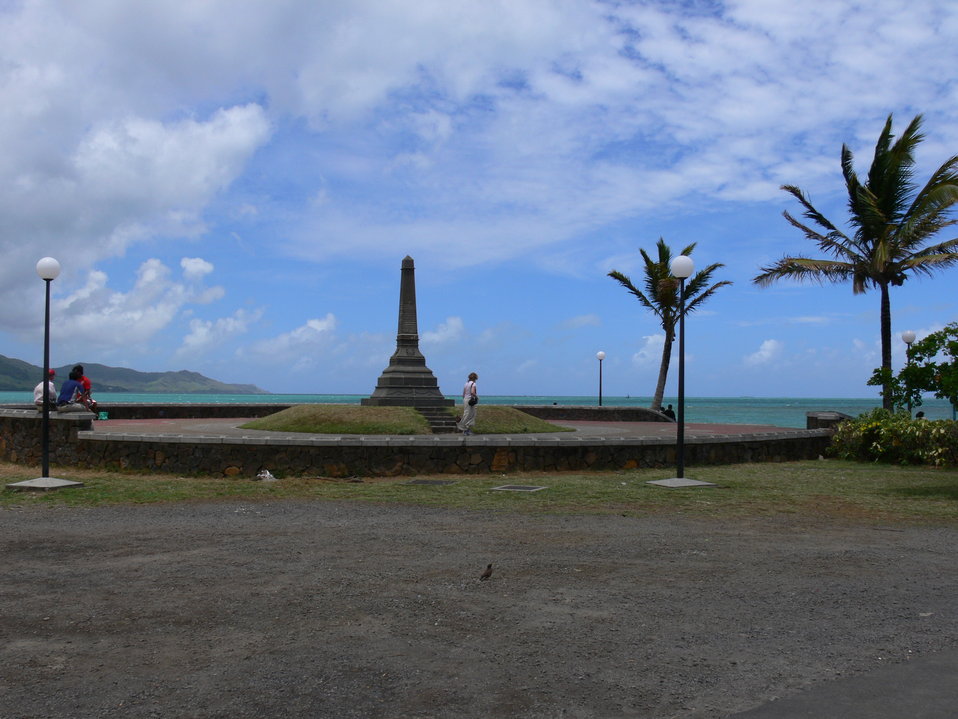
This photograph was made by myself at Grand-Port Mauritius, in the graceful year of 2007 with the digital camera Panasonic FZ-30. This is the monument dedicated to the 1810 battle between French and British navy. This is the bay were all this happened. This monument was created in 1899. It is situated at the place called Point de Régate, on the shore of the harbour of Grand Port, very near Mahébourg (or even inside Mahébourg) I've made several high resolution pictures of the harbour of Grand Port, Mauritius. If you need such pictures write to wikipedia user Alexey M. Author: Alexey Muzalyov